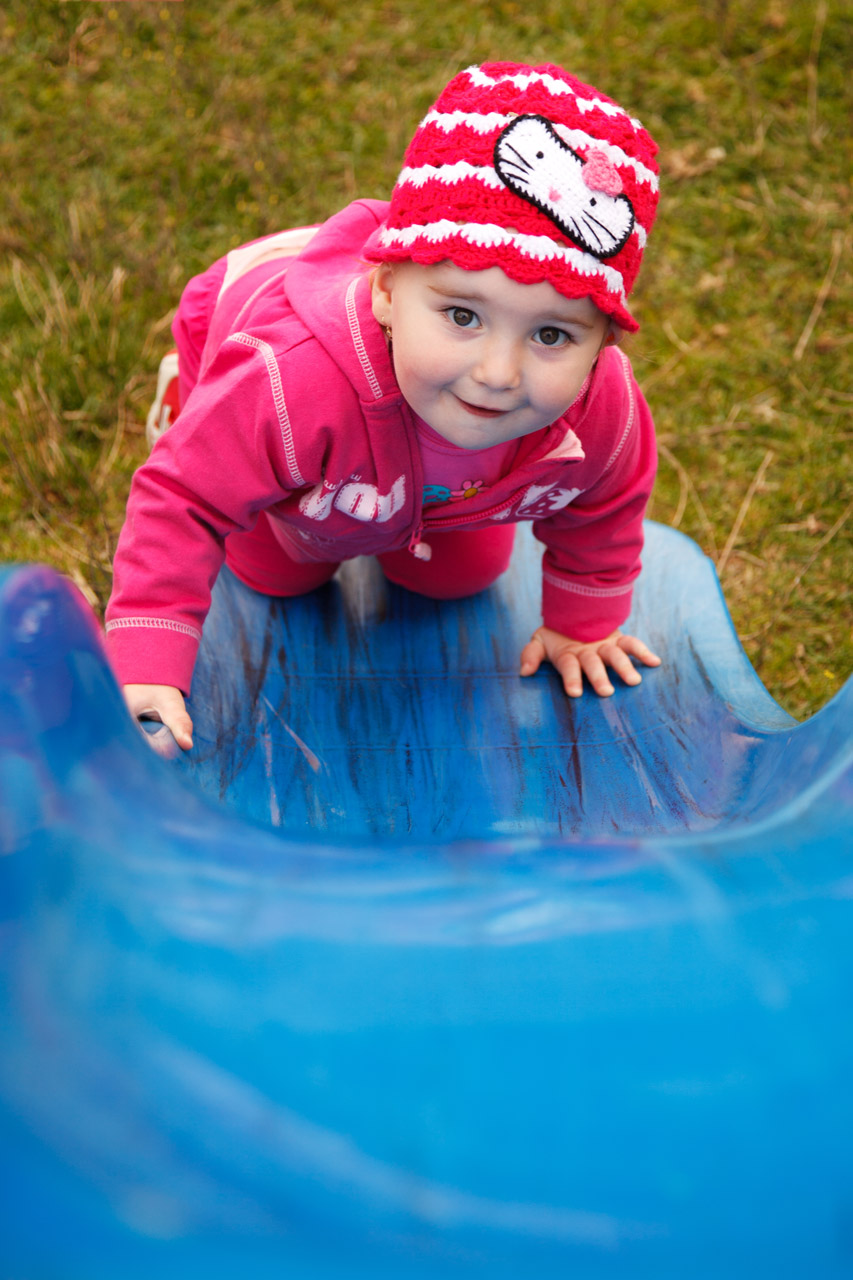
Climbing slide

Young baby girl climbing slide.